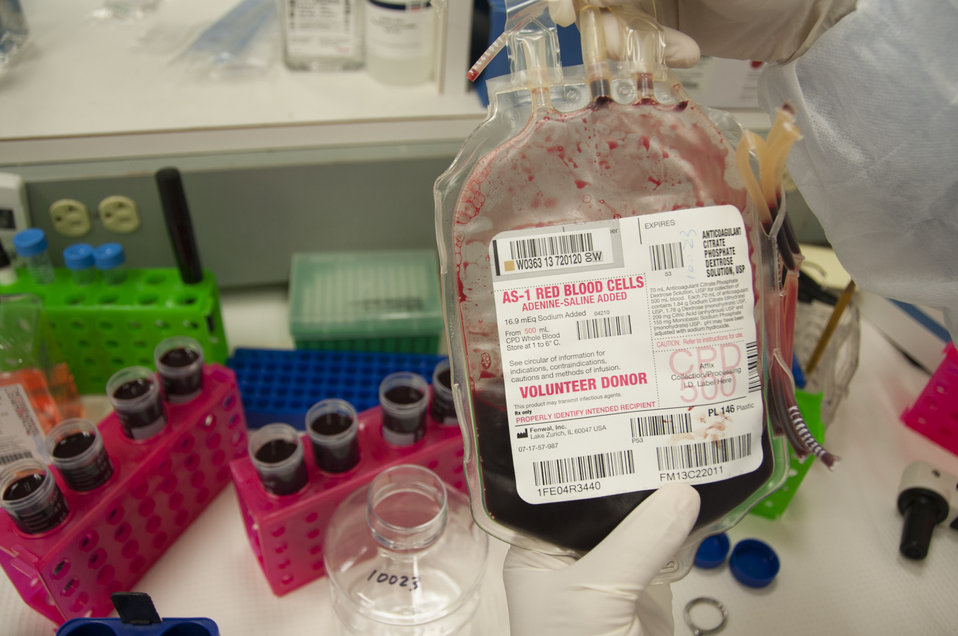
Blood Research: Saving Lives (8369)

Jason Liu, Ph.D., a laboratory chief at FDA’s Office of Blood Research and Review, verifies the labeling of a unit of blood. FDA is responsible for the safety of our nation’s blood supply and is at the forefront of evaluating and encouraging innovative technologies for protecting it.

Read this Consumer Update to learn more: Advances in Saving Lives with Blood